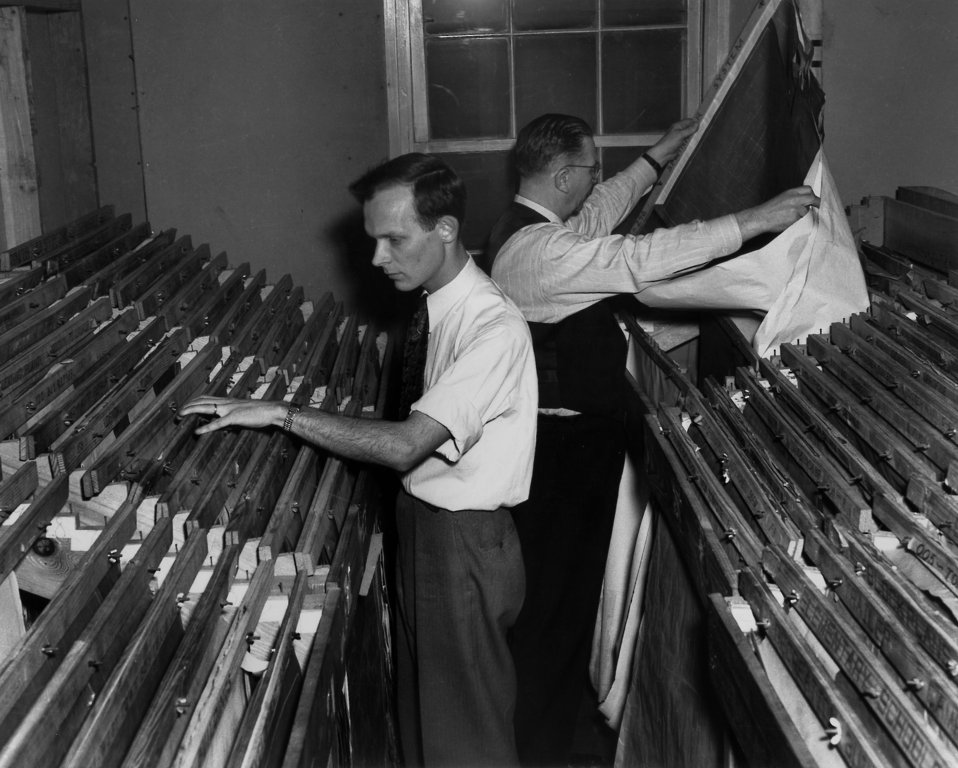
Roane Anderson Co. Engineering Dept. Oak Ridge

Pro 255-1 DOE photo Ed Westcott 1/13/1945 Oak Ridge Tennessee
Roane Anderson Co. Engineering Dept.